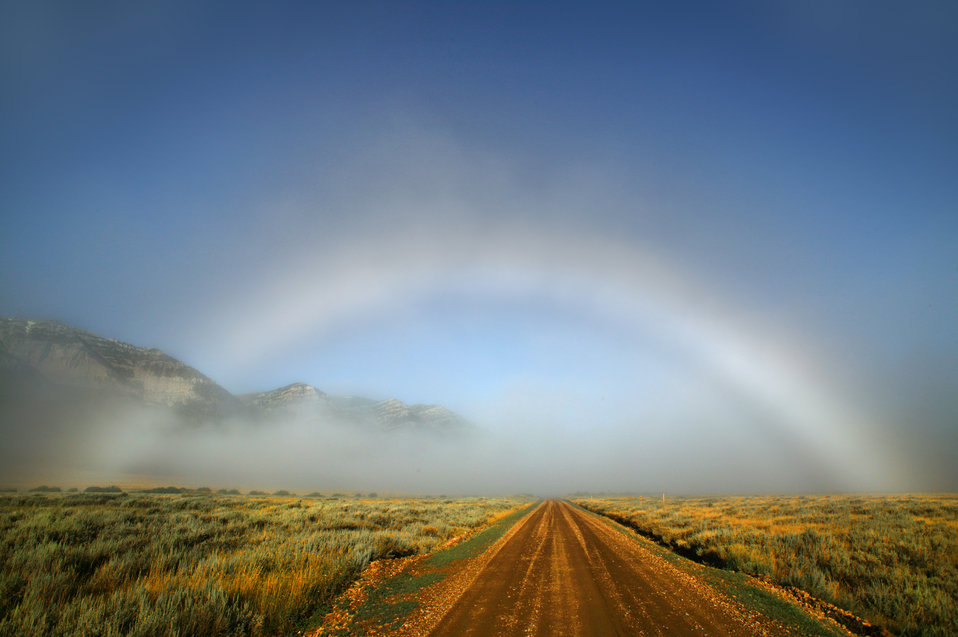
9th Place - Fogbow

Fogbow centered on South Valley Road in Red Rock Lakes National Wildlife Refuge. Fogbows form in the same way as rainbows. A small fraction of the light entering droplets is internally reflected once and emerges to form a large circle opposite the sun. Fogbows are formed by much smaller cloud and fog droplets than the raindrops that form rainbows.

Credit: James 'Newt' Perdue / USFWS

Photo Contest Entry #130